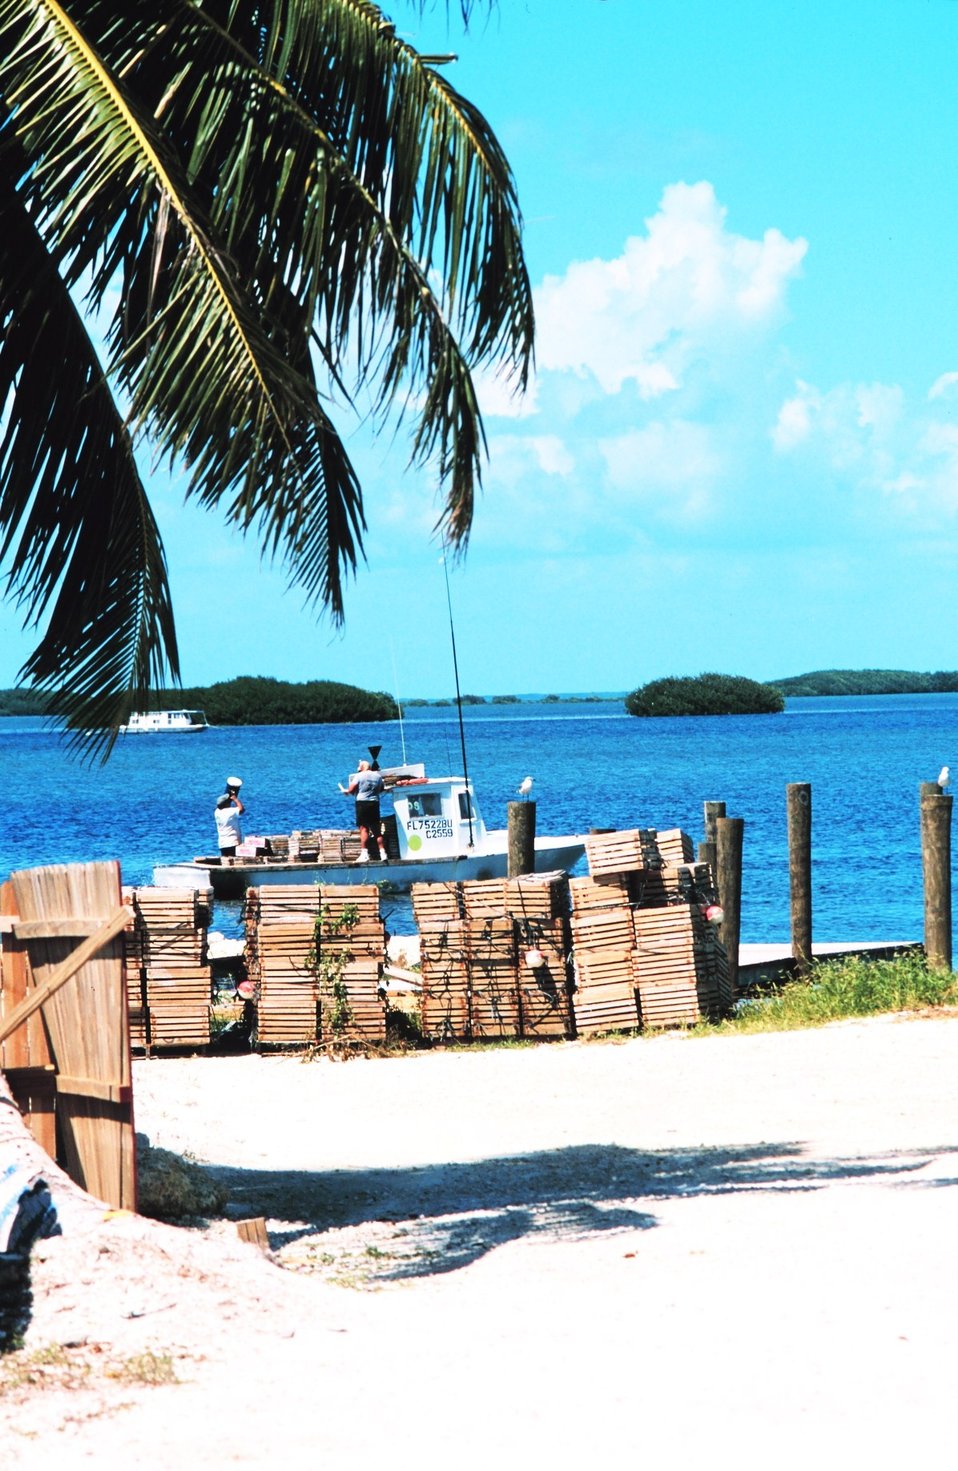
Fishing in paradise - the stone crab fishery at Islamorada